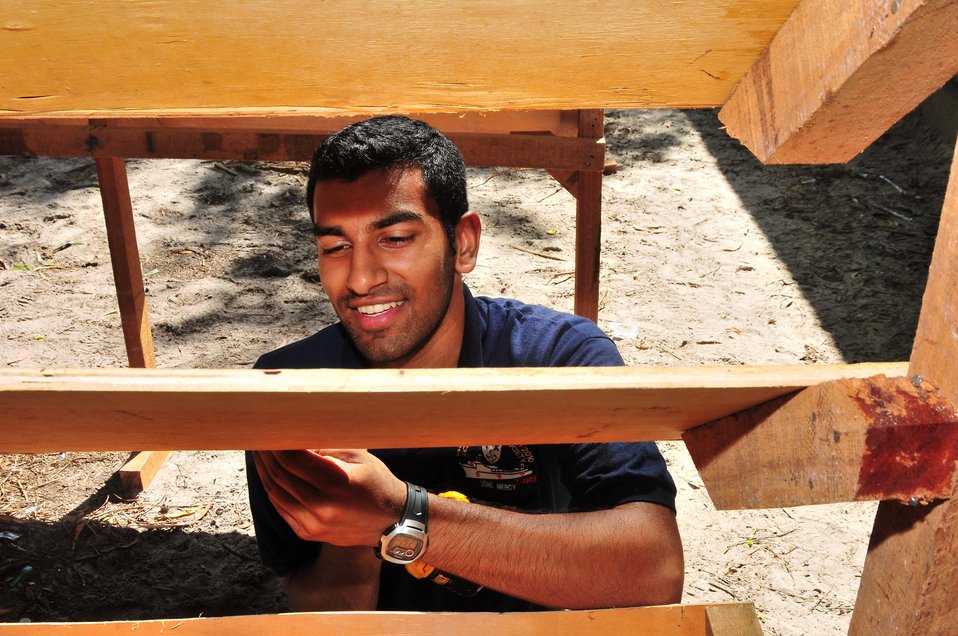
UVA Student Volunteer Dave Gupta Builds Bookcases

Dave Gupta, a University of Virginia student volunteering with University of California, San Diego Pre-Dental Society, builds bookcases for the Andaung Thma School during an engineering civic action program in support of Pacific Partnership 2010 on June 24, 2010, in Sihanoukville, Cambodia. The Military Sealift Command hospital ship USNS Mercy (T-AH 19) is in Cambodia conducting the fifth in a series of annual U.S. Pacific Fleet humanitarian and civic assistance endeavors to strengthen regional partnerships.